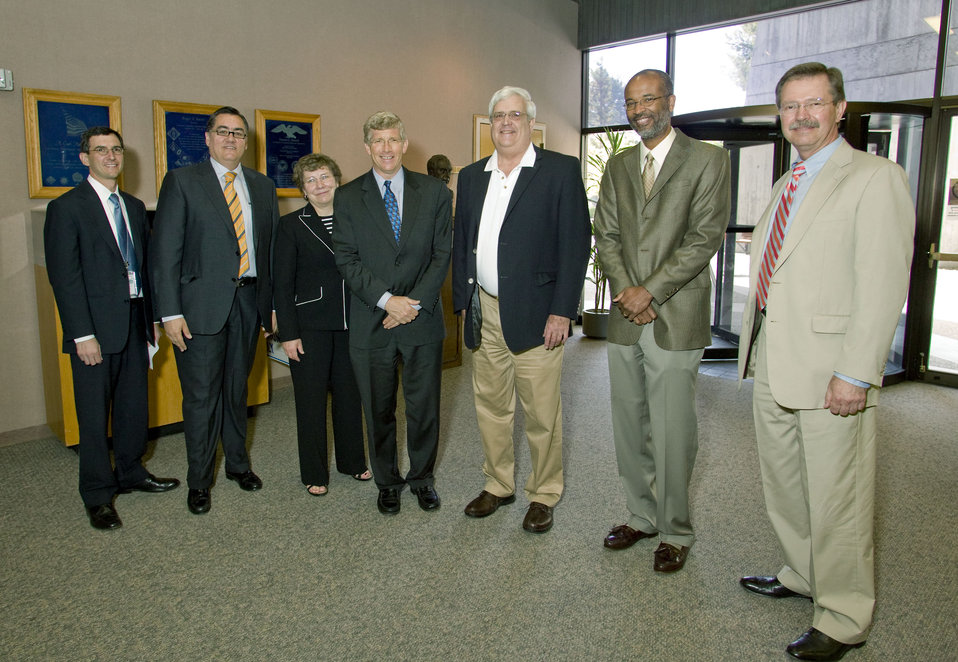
Poneman 02

Left to right, Adam Cohen, Tomas De La Rubia, Alice Williams, Daniel
Poneman, George Miller, Phil Hill, Bruce Goodwin